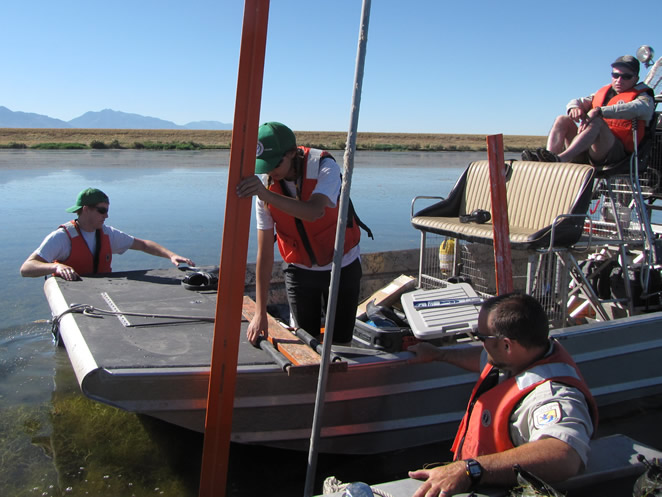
Placing Boundary Signs in Wet Areas

Youth Conservation Corps crew use airboats to place boundary signs in wet areas with help from U.S. Fish and Wildlife Service employees.